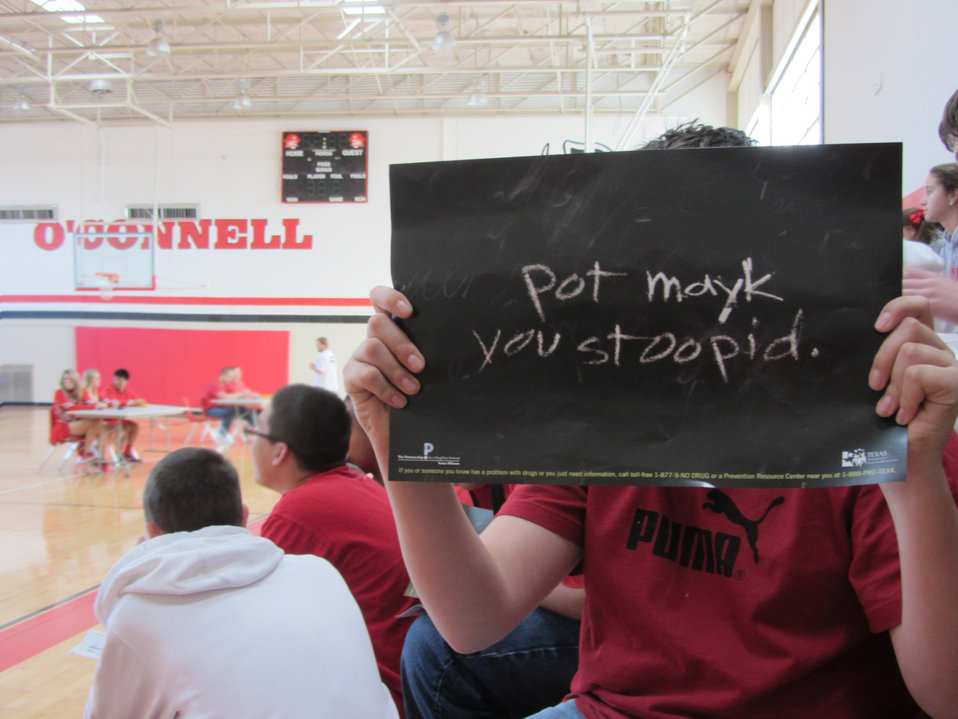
Pep Rally, NDFW 2013

Galveston City, Tex. At O'Connell Preparatory School, Senior Emily L. organized a NDFW pep rally, complete with a Drug Facts Game Show and Poster Contest.